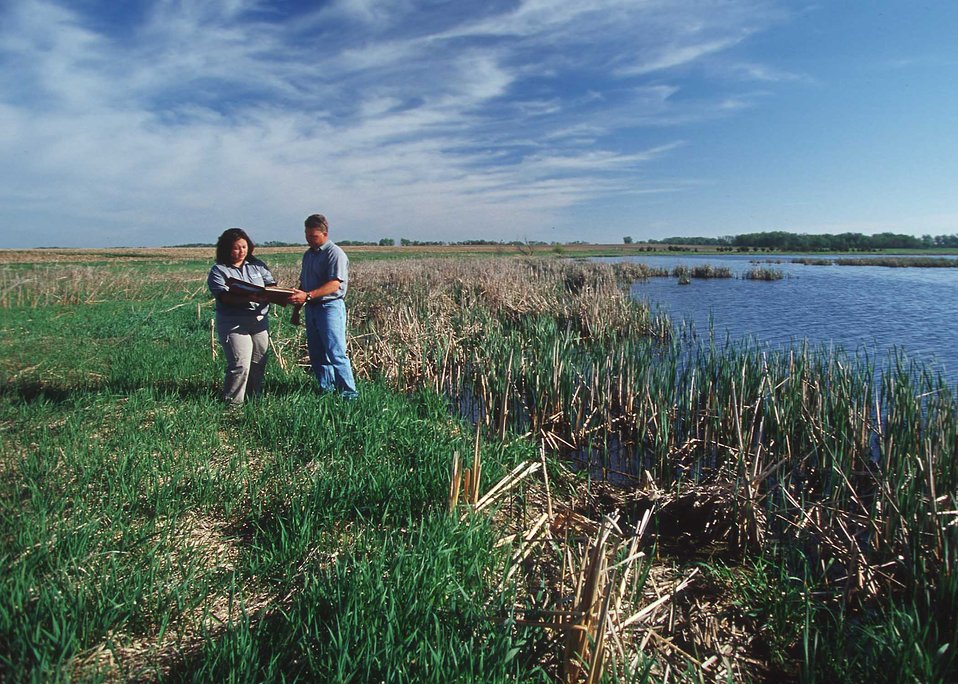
NRCS Conservationist working with a landowner in northeastern South Dakota.